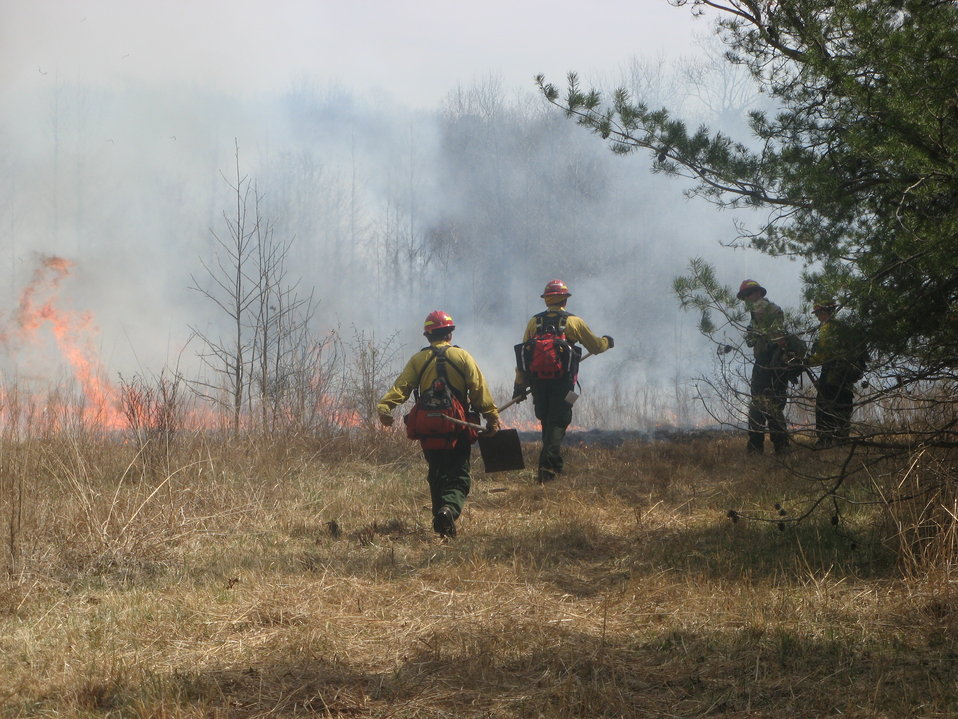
Walking burn perimeter

Laurel, MD:Firefighters carrying hand tools walk a controlled burn perimeter carrying hand tools.